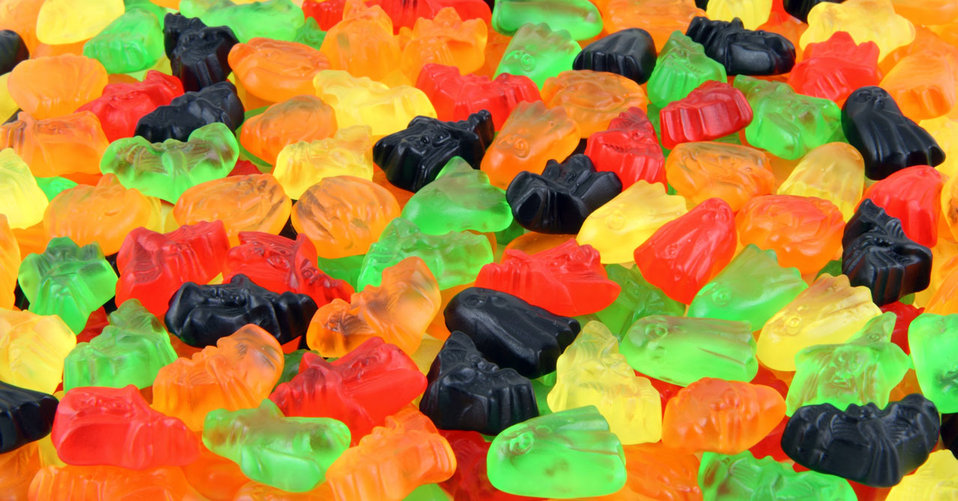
Halloween candy

Halloween shape sweets background.